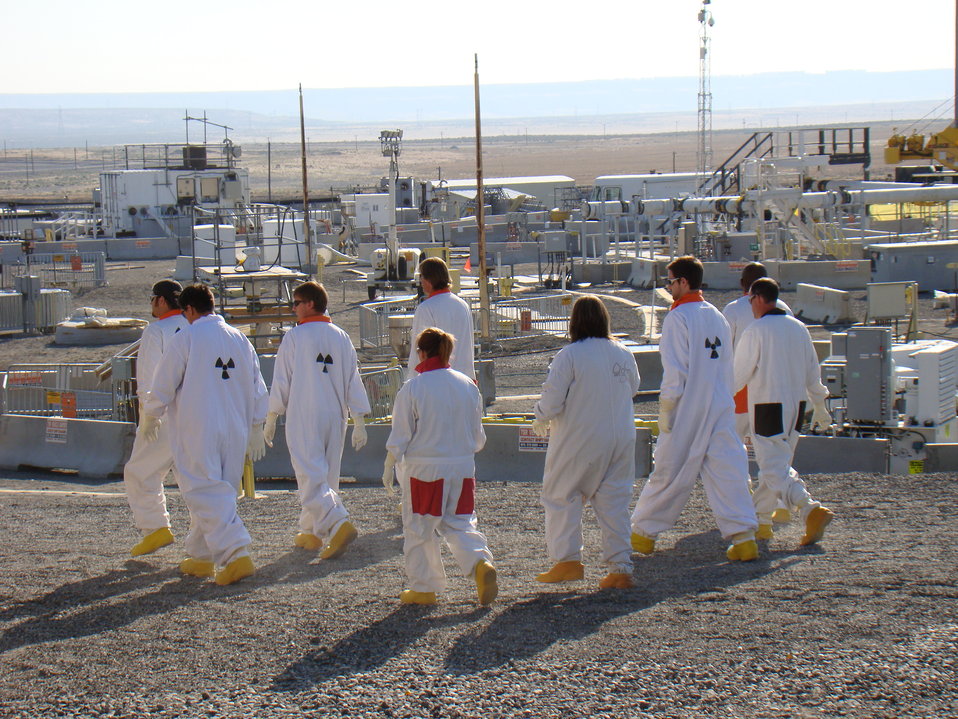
ORP Recovery Act jobs

New hires train to become certified Health Physics Technicians, who help keep coworkers safe from radiological contamination. Recovery Act funding at Hanford's tank farms helped create nearly 600 jobs at the peak of employment last fall.